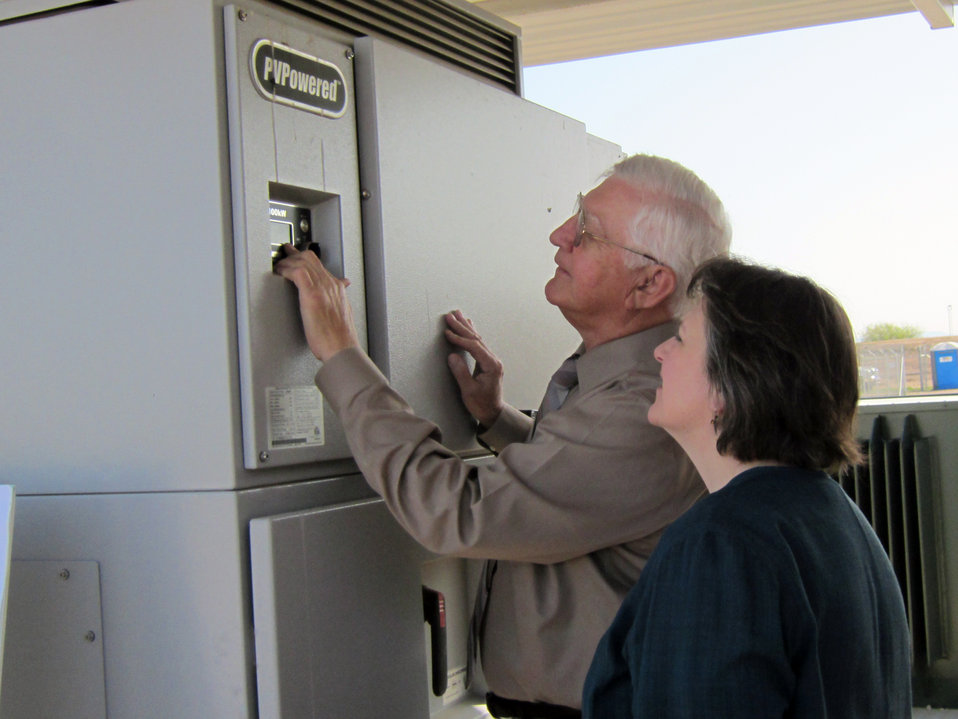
Agriculture Deputy Secretary Dr. Kathleen Merrigan with Victor Orlowski
President of Professional Engineers for the Dairy Industry as he demonstrates new equipment on the Zimmerman Dairy in Queen Creek, Arizona, on Tuesday, March 27, 2012.